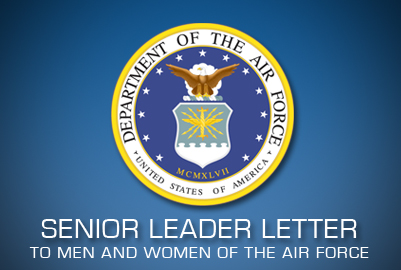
Senior leader letter to men and women of the Air Force